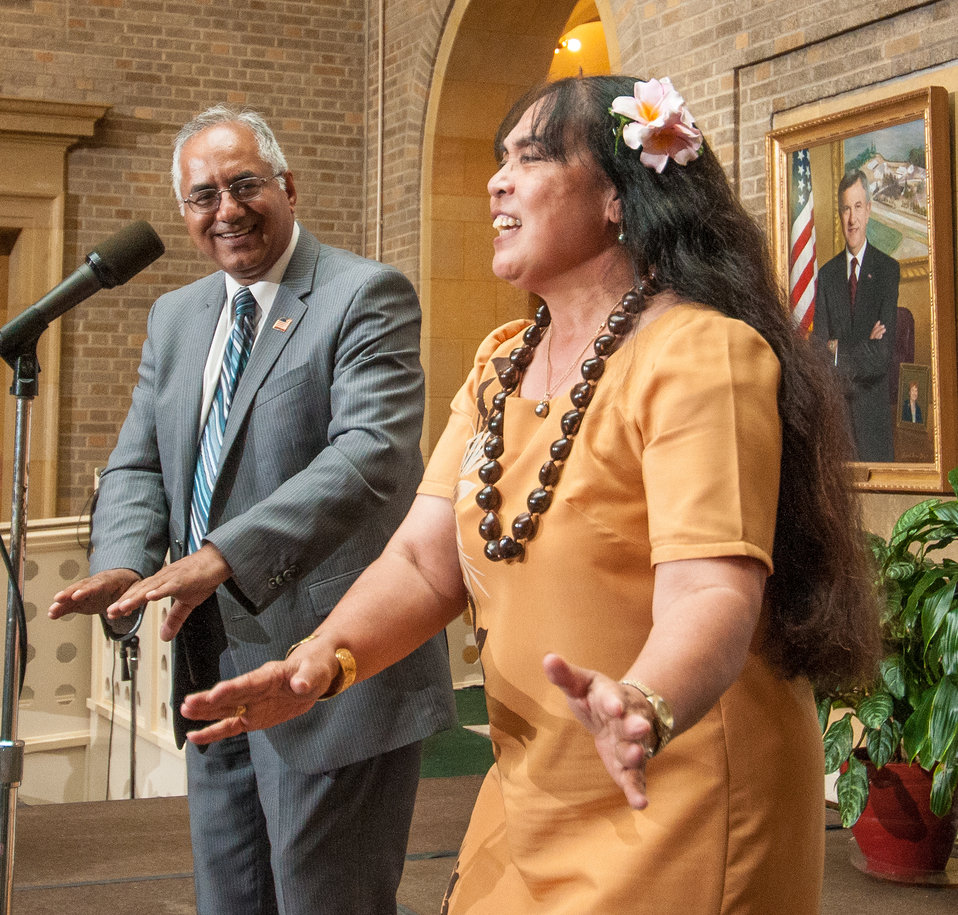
U.S. Department of Agriculture’s (USDA) Saleia Afele Faamuli (oranage color dress,) invites this audience to their feet to learn to hula dance, during the U.S. Department of Agriculture (USDA) Asian Pacific American Heritage Month Observance, at the USDA headquarters, Whitten Building patio, in Washington, D.C., on Thursday, May 23, 2013. The Hawaiian hula dance is one of the many valued cultural activities from the Pacific Islands, and represents part of This year’s theme: “Building leadership; Embracing the Cultural Values and Inclusions.”